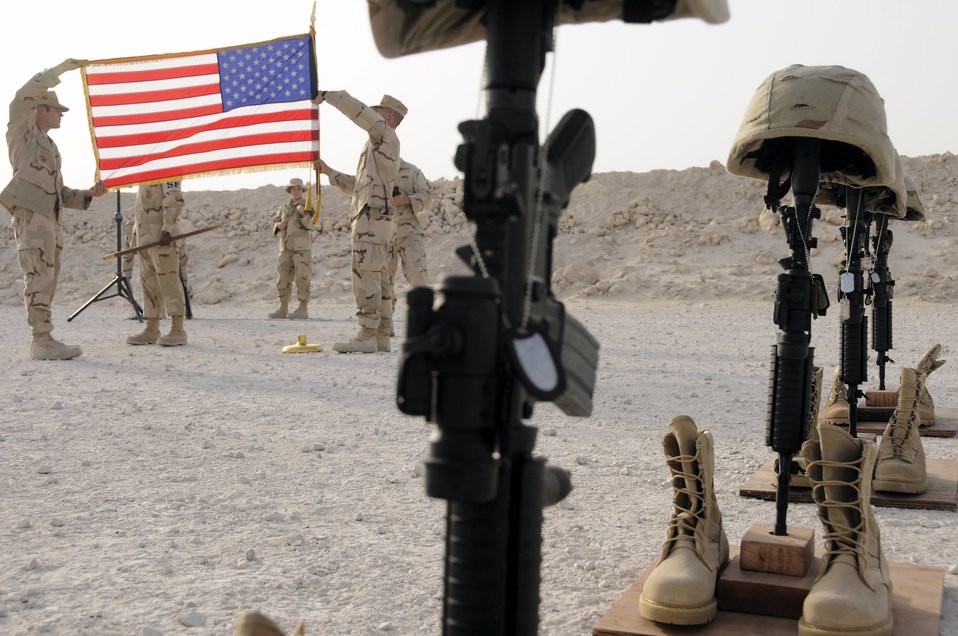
Paying tribute

Airmen at a base in Southwest Asia held a